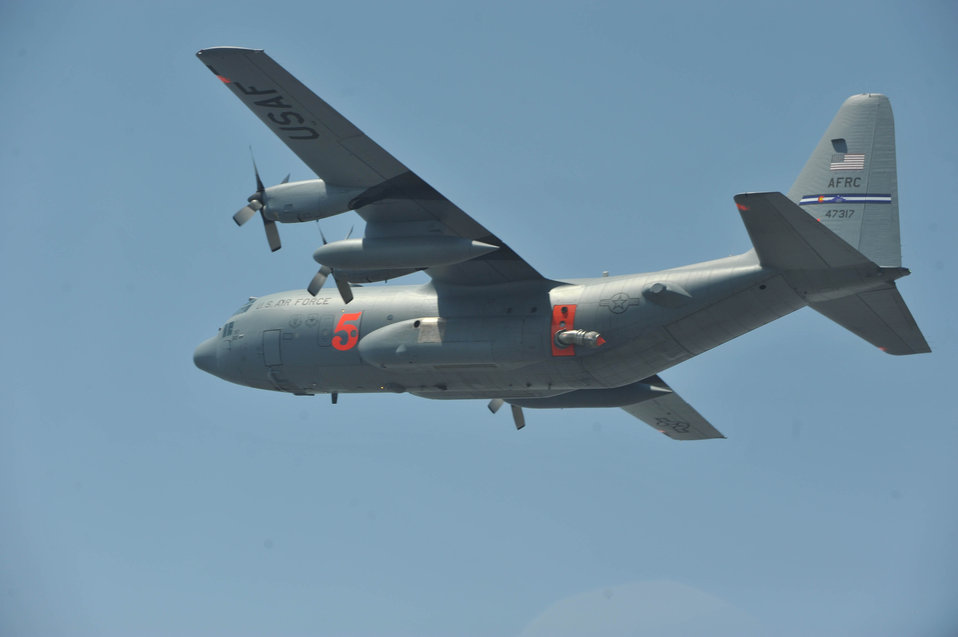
Wild fires in Texas

An Air Force Reserve C-130 Hercules from the 302nd Airlift Wing, Peterson Air Force Base, Colo., equipped with a U.S. Forest Service Modular Airborne Fire Fighting System, flies toward a wildfire west of Austin, Texas, April 17. Six MAFFS C-130s, deployed by U.S. Northern Command to Texas, have conducted several aerial firefighting missions over that state's fires in the past two days.